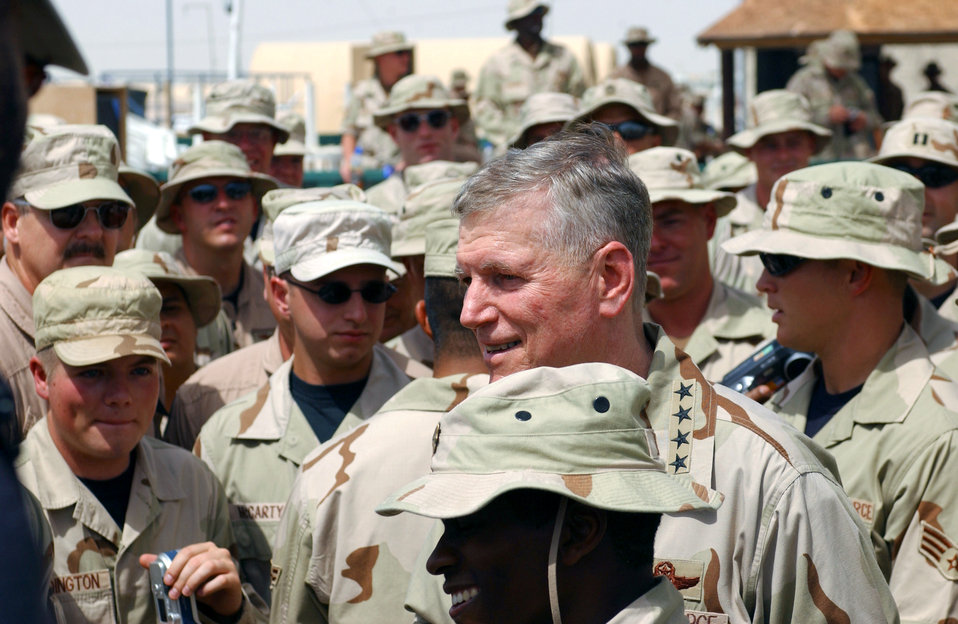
Myers visit

OPERATION IRAQI FREEDOM --The chairman of the Joint Chiefs of Staff, Gen. Richard B. Myers, takes some time to personally meet the airmen of the 64th Air Expeditionary Wing during his visit to Southwest Asia on May 11. Myers thanked the troops for their work supporting Operation Iraqi Freedom.